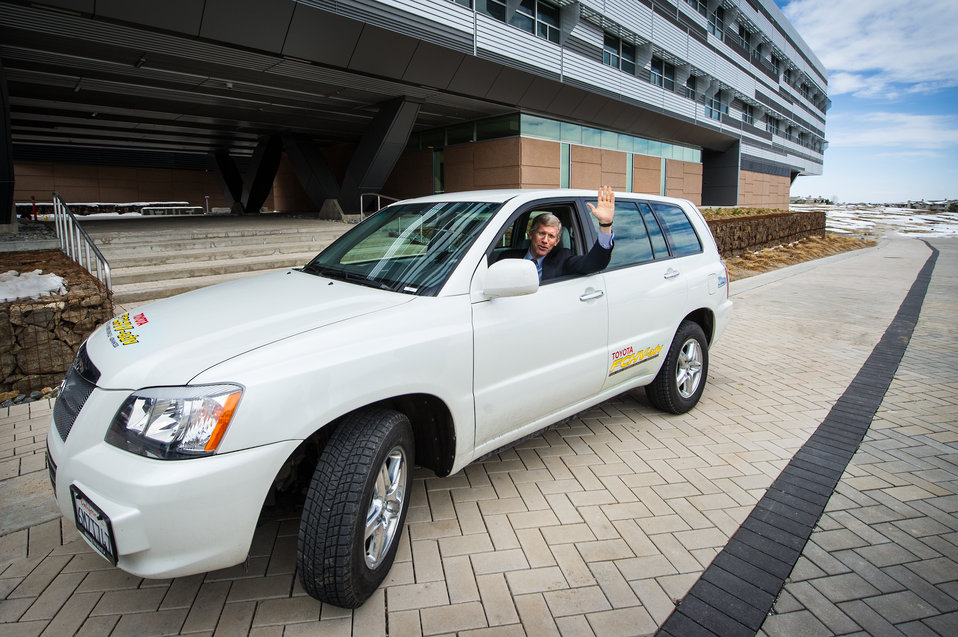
Acting Secretary Daniel Poneman, U.S. Department of Energy

April 19, 2013- Acting Secretary Daniel Poneman, U.S. Department of Energy, checks out a Toyota Fuel Cell Electric Vehicle during a tour of the new Energy Systems Integration Facility at the National Renewable Energy Laboratory (NREL) in Golden, Colorado.